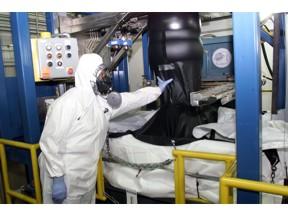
Fernald waste shipments

In April 2006, Fernald workers packaged the last of 5,100 cubic yards of low-level waste from Silo 3 and shipped it off site. On April 11, 2006, the last shipment of Silo 3 waste left Fernald, Tennessee, for Envirocare of Utah. Workers completed the 12-month extraction and packaging campaign without a single Occupational Safety and Health Administration recordable accident and with zero airborne incidents. A total of 2,297 - 3 cubic yard bags were needed to package the material. 285 truck shipments carried the waste safely over 1 million miles.